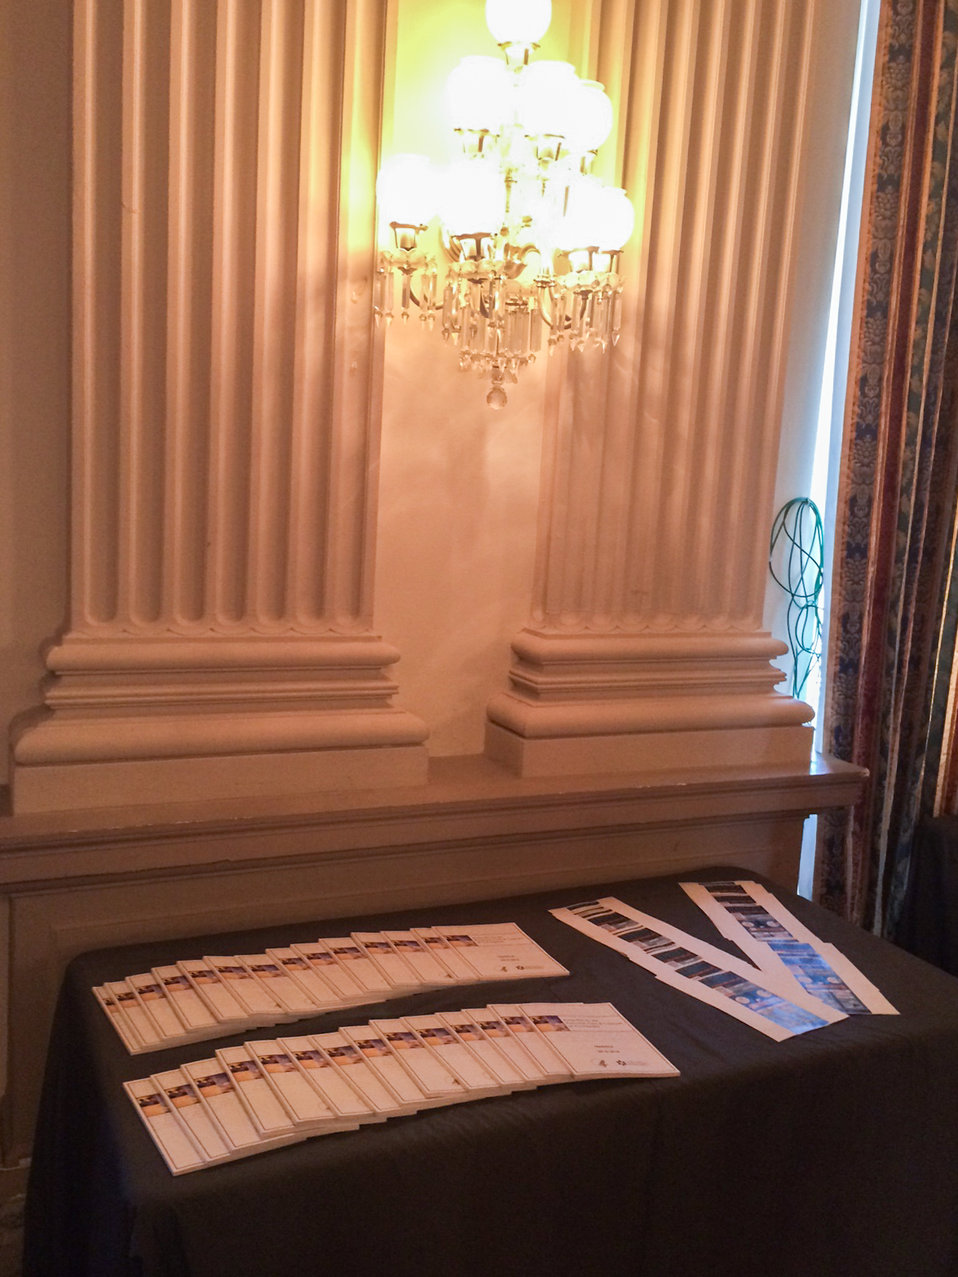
14 0519 HepTestingDay-2